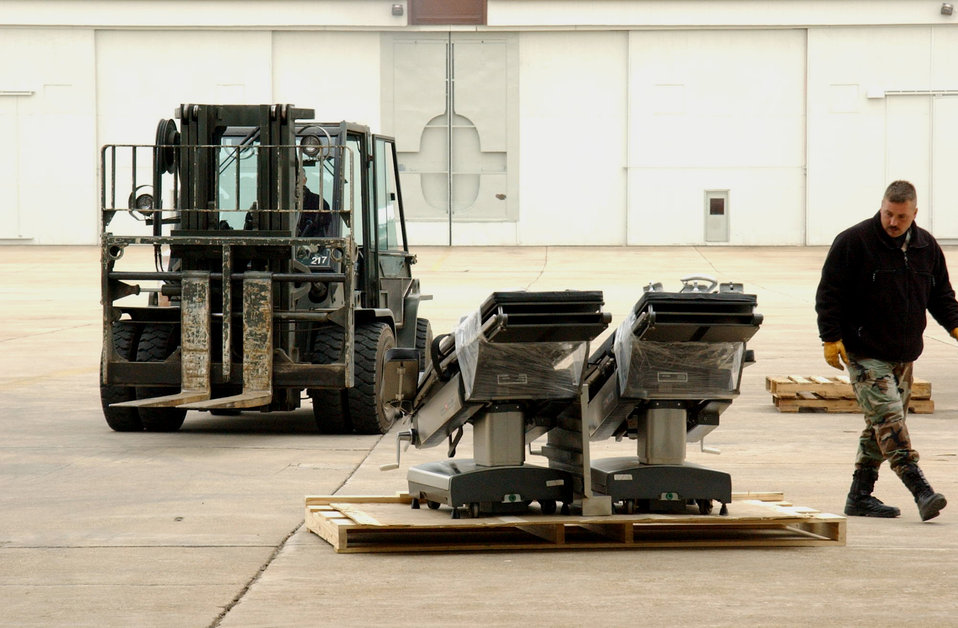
New York Airmen provide medical equipment for refugees

PLATTSBURGH, N.Y. -- A pair of operating tables at the closed Air Force base here are ready for crating and shipping. Airmen from New York's Stratton Air National Guard Base helped prepare equipment taken from the closed base hospital for transport by sea to Nicaragua.